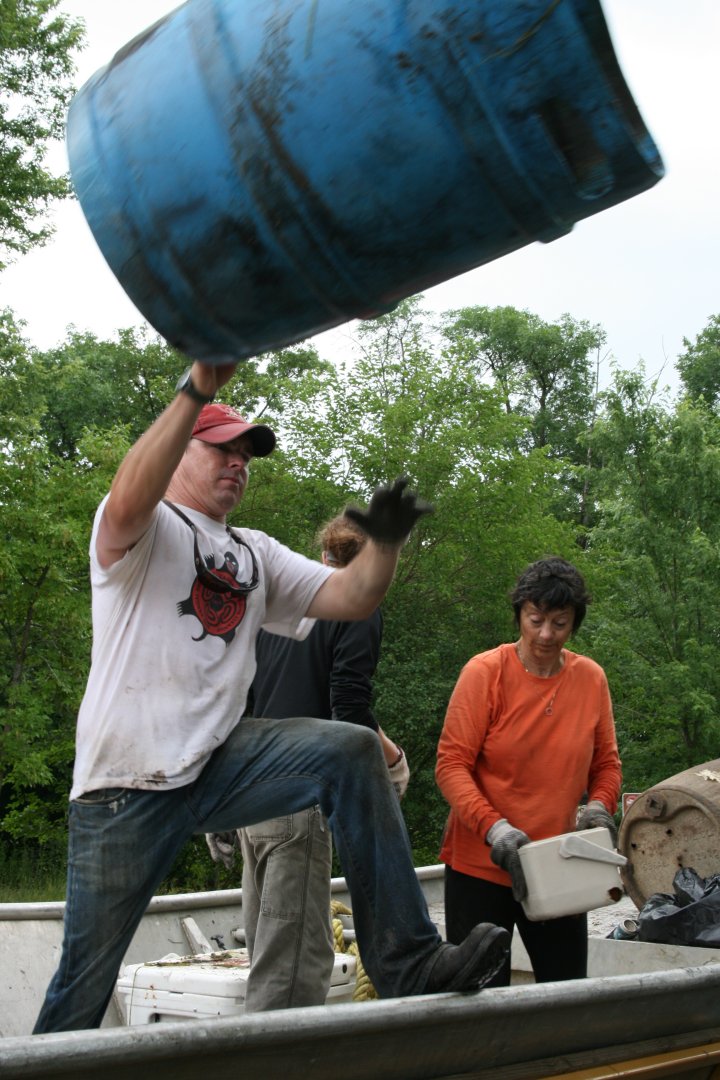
Chad throws a barrel into the dumpster

Living Lands and Waters Founder and President Chad Pregracke throws a barrel into a dumpster during The Great Mississippi River Cleanup held June 16, 2012 on the Winona District.